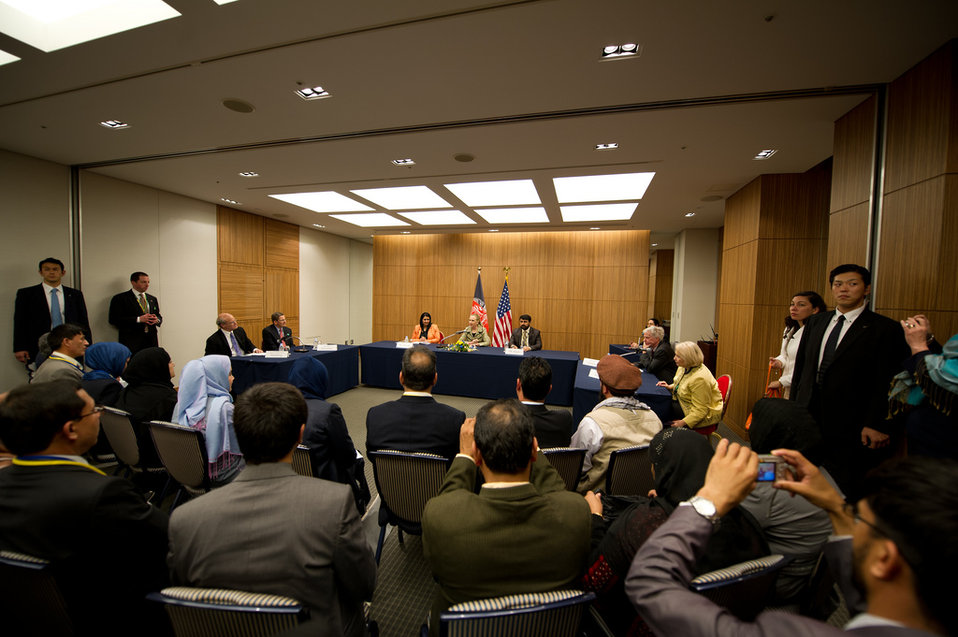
Secretary Clinton Paricipates in the Afghan Civil Society Event

U.S. Secretary of State Hillary Clinton participates in the Afghan Civil Society Event with Ambassador-at-Large for Global Women's Issues Melanne Verveer on the sidelines of the Tokyo Conference on Afghanistan in Tokyo, Japan, on July 8, 2012.